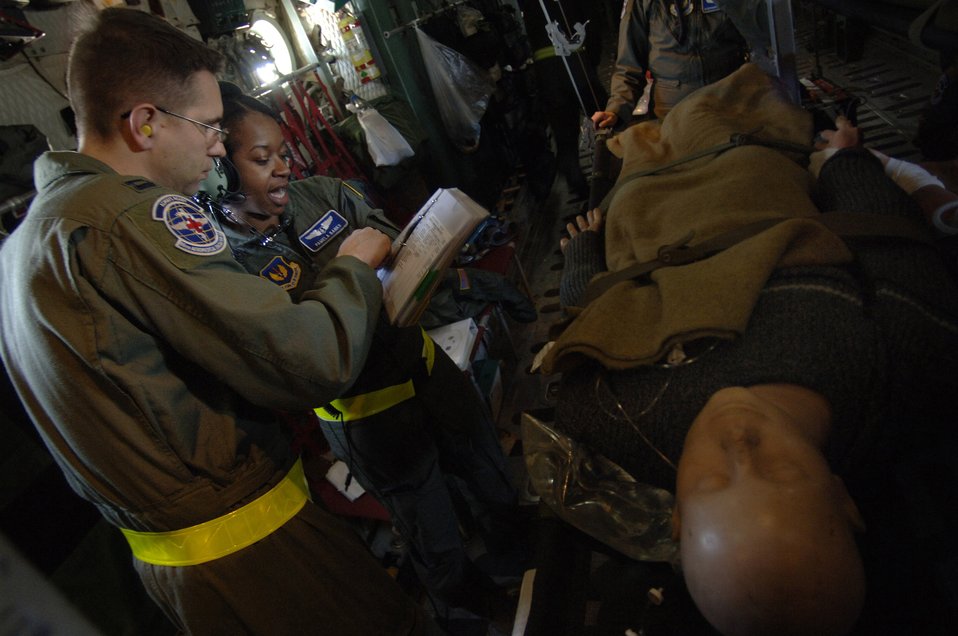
Medical professionals hone patient care skills

Capts. Troy Kinion and Pamela Banks cover a checklist detailing how to properly secure patients and medical equipment for a potentially rough landing in preparation for an emergency landing training scenario Feb. 19 aboard a C-130 Hercules flying over southern Germany. Captains Kinion and Banks are flight nurses.